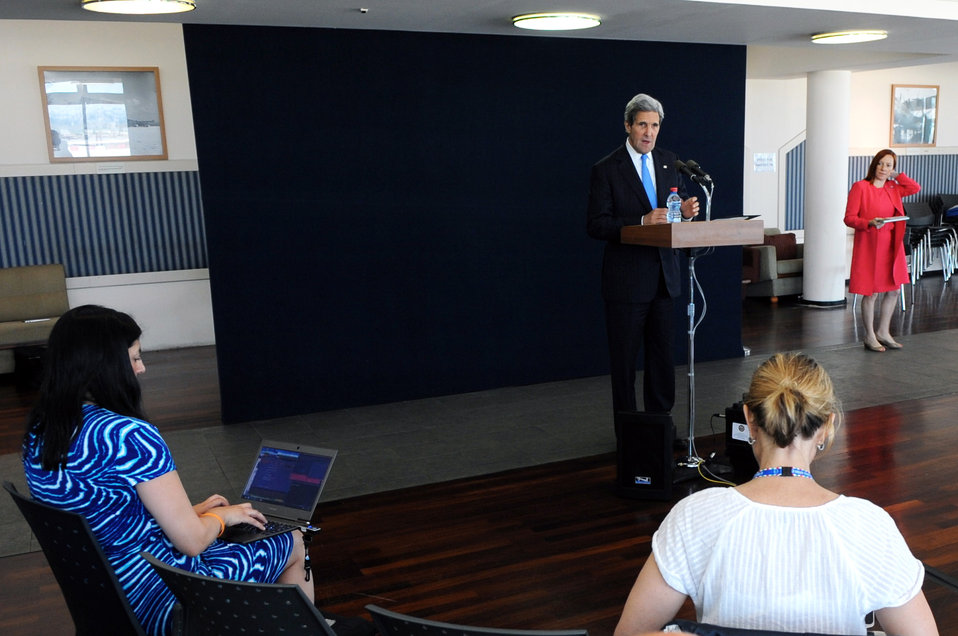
Secretary Kerry Addresses Reporters in Tel Aviv

U.S. Secretary of State John Kerry speaks during a news conference in Tel Aviv, Israel, on May 24, 2013.